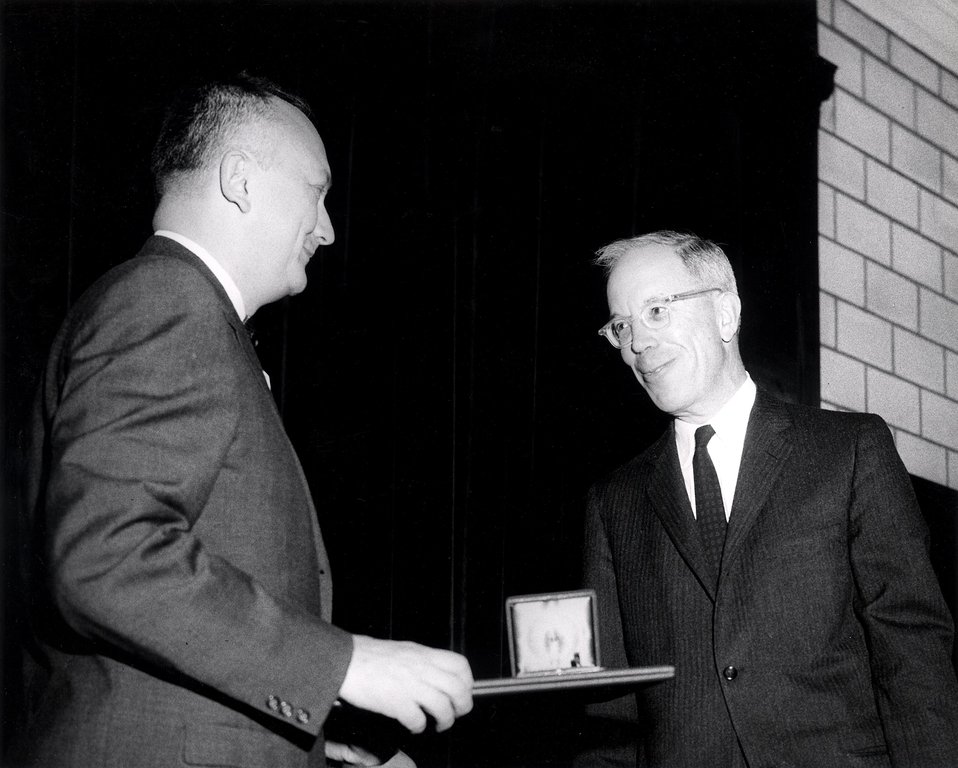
Dr. Benedict, GAC and Dr. Tobias. ERNEST O. LAWRENCE AWARD - 1963. National Academy of Sciences, April 25, 1963.